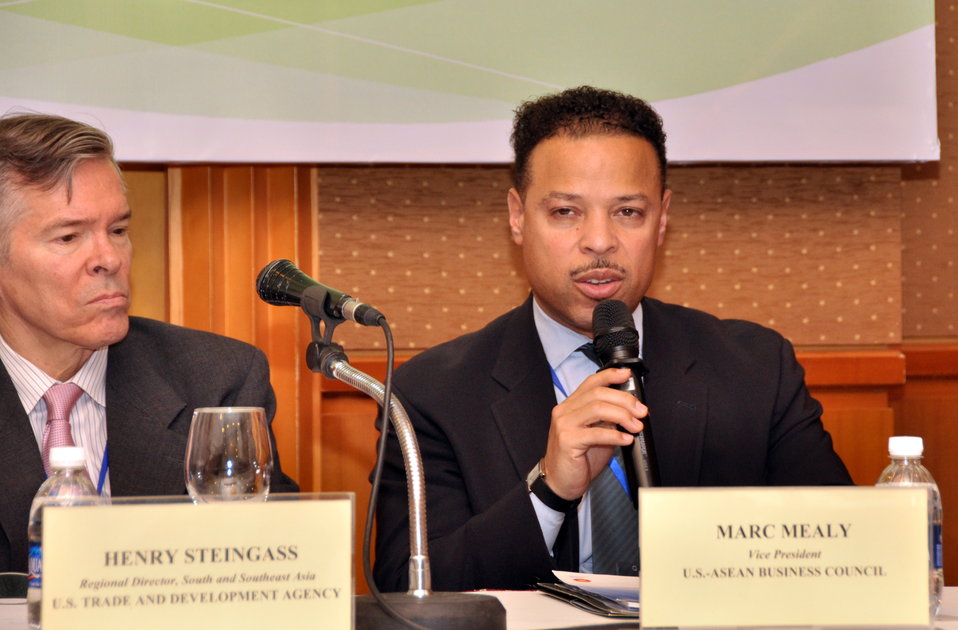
Mr. Marc Mealy, Vice President of the U.S.-ASEAN Business Council, addresses a press conference at the LMI Infrastructure Best Practices Exchange in Hanoi

January 14, 2013